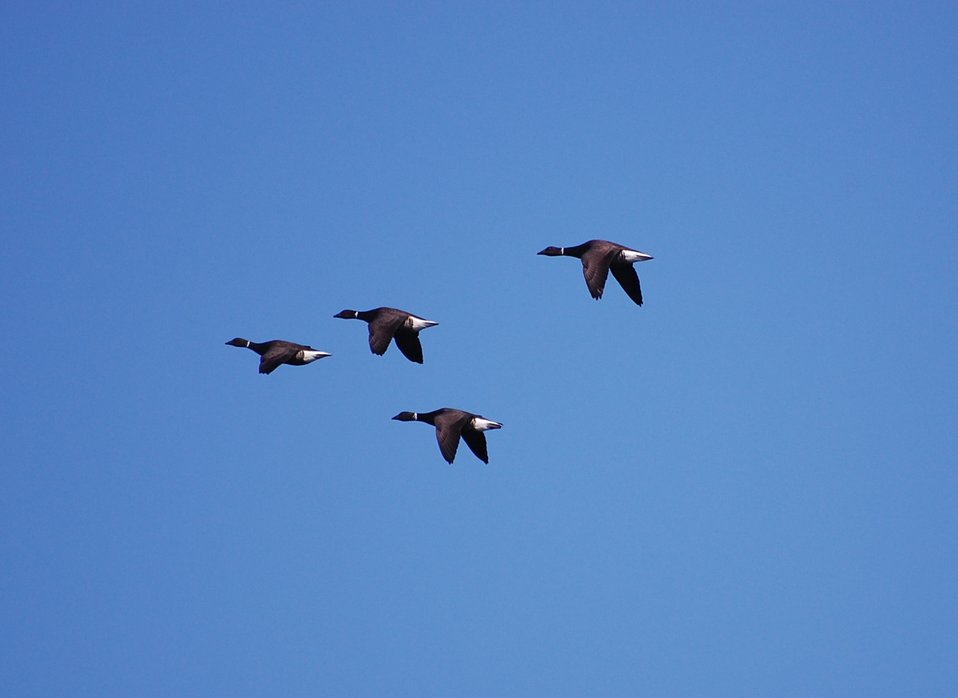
Brant at Izembek Lagoon

Izembek National Wildlife Refuge